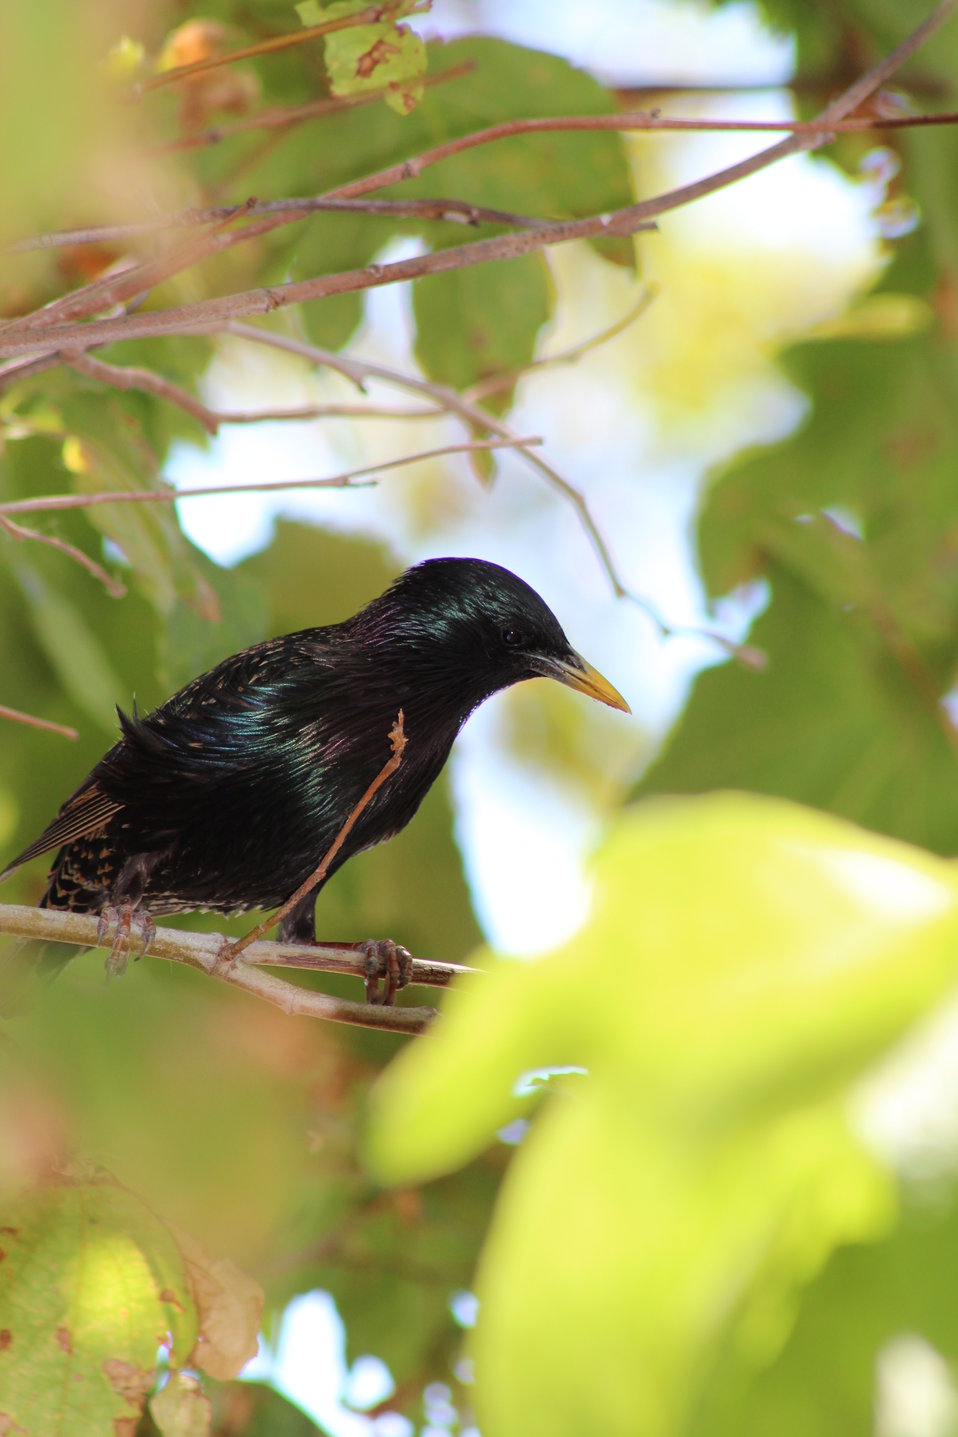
European Starling in the Sacramento River NWR